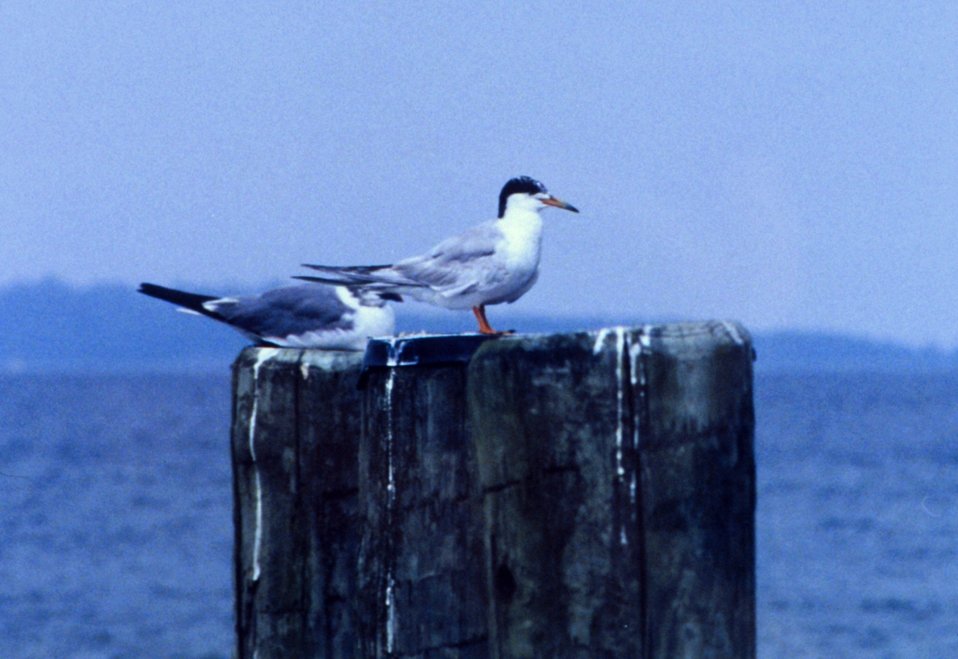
Possibly Forster's Tern perched on a piling.